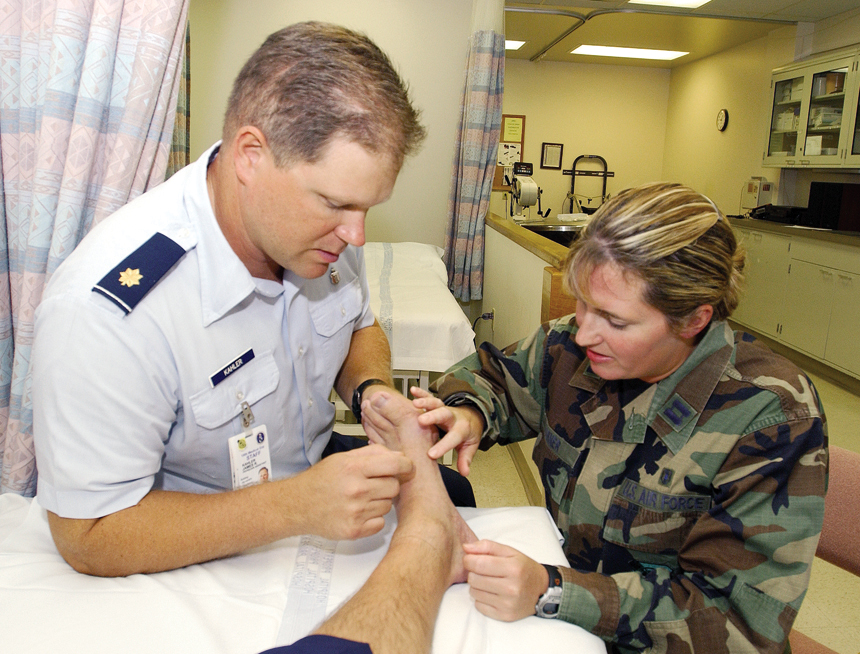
Physician assistants strong support for military medical units

HICKAM AIR FORCE BASE, Hawaii -- Maj. James Kahler, a physician assistant, makes a diagnosis with physical therapist Capt. Kendra Warner. Both are assigned to the 15th Medical Group here.